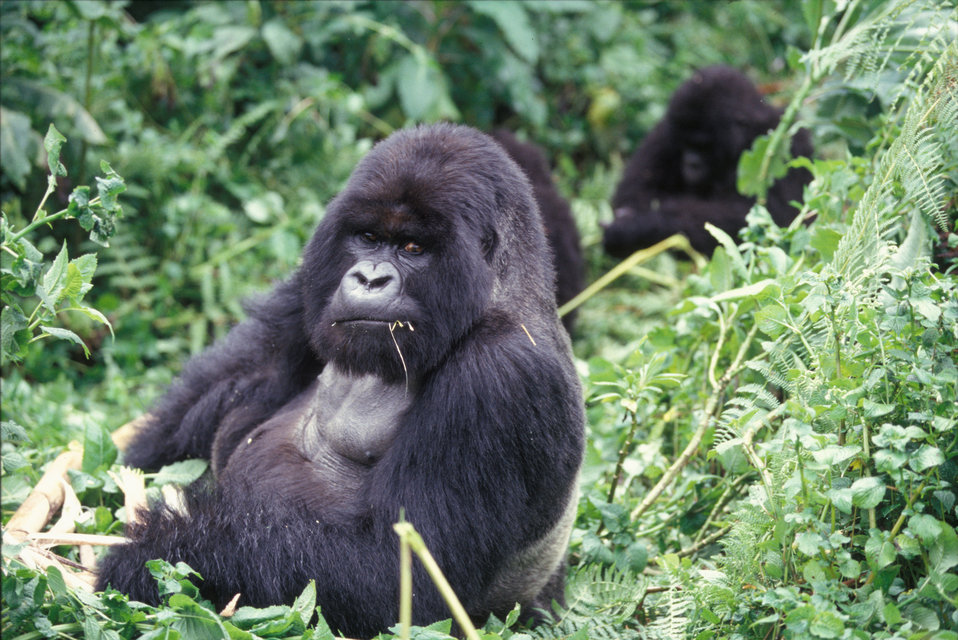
Mountain gorilla looking